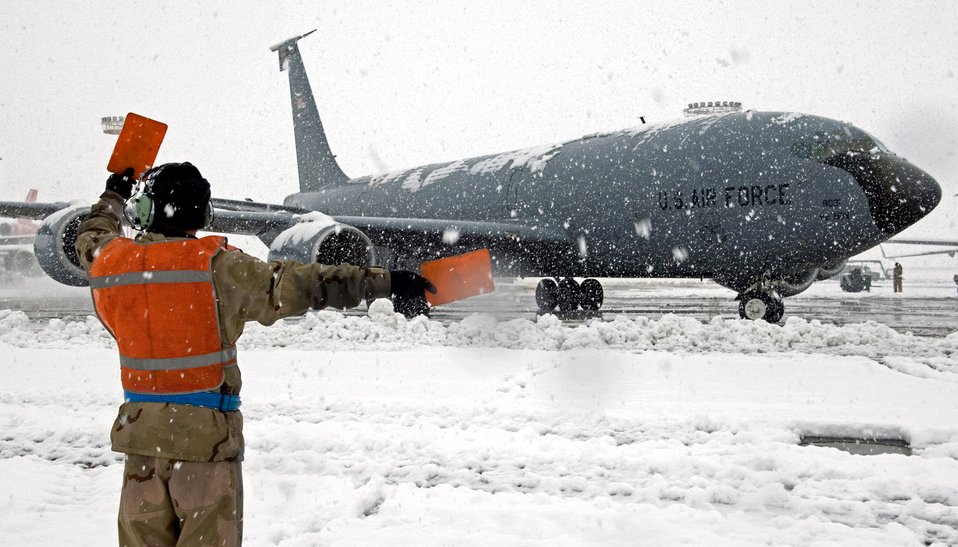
Baby, it's cold outside

Staff Sgt. Manuel Garibay directs a KC-135 Stratotanker at Manas Air Base, Kyrgyzstan, Nov. 11 taxiing out for a refueling mission. Sergeant Garibay is a maintainer with the 376th Air Expeditionary Wing.